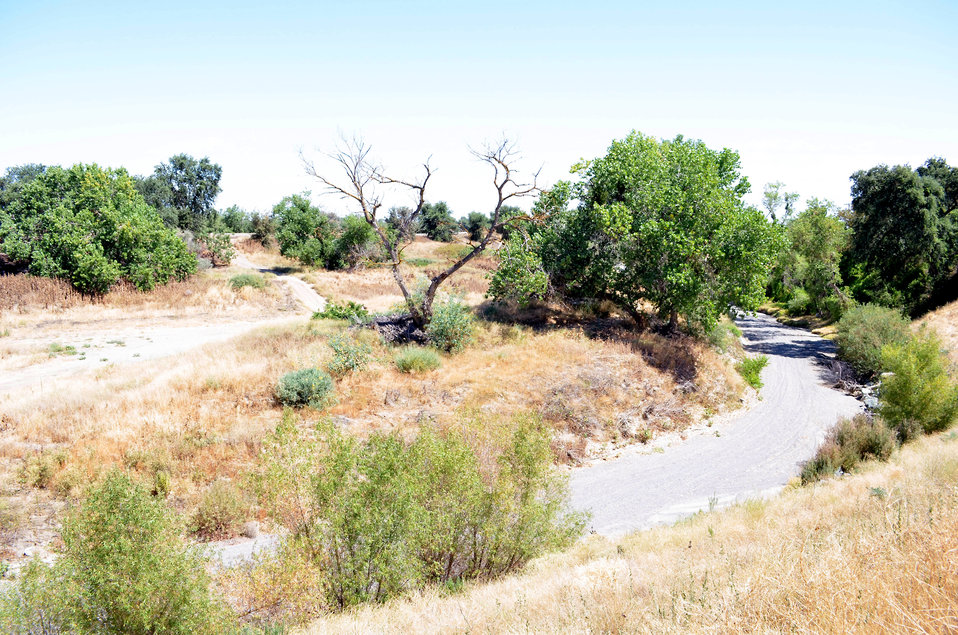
A dry levee system

130715-A-QE256-022 – The levee system along Cache Creek in Yolo County, Calif., shown July 15, 2013. During winter months the levee channels water toward the Yolo Bypass and the Sacramento River, but remains mostly dry in the summer. The U.S. Army Corps of Engineers Sacramento District is looking at possible ways to reduce flood risk along the creek.